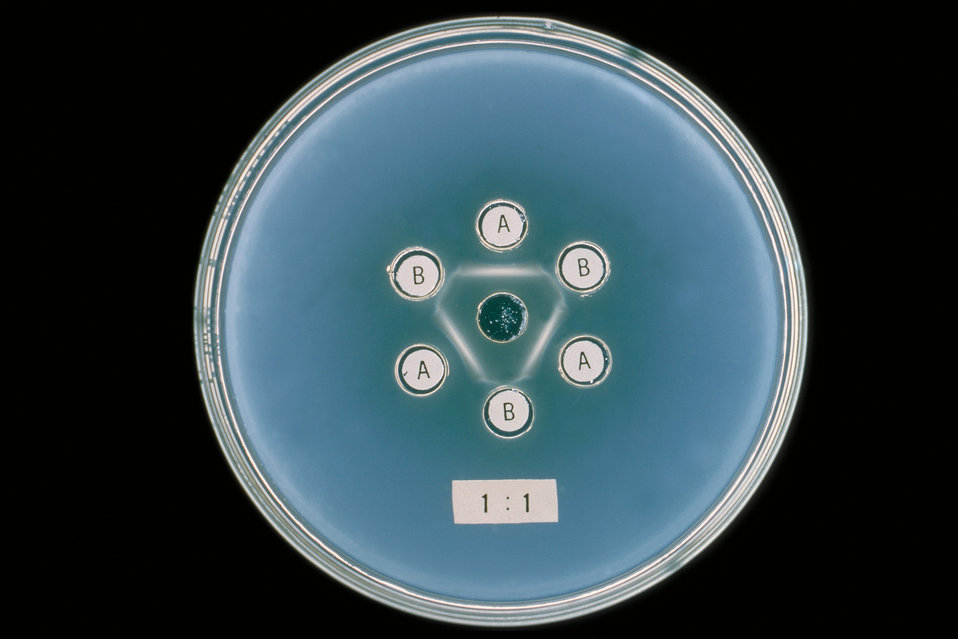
A lab study involving agar gel reactions of Actinomyces sp., strains X-407 and X-573, with homologous antibodies A and B.